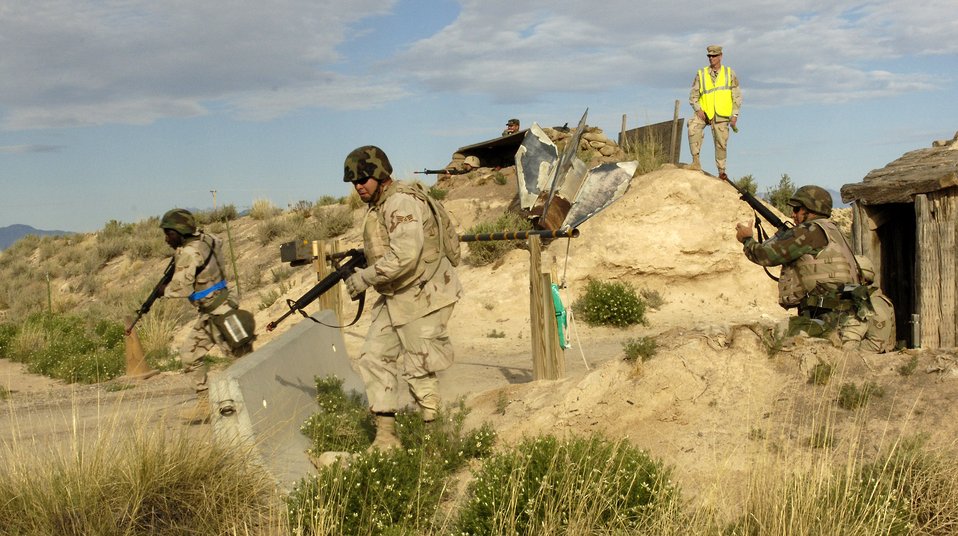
Airmen complete realistic deployment exercise

Airmen from the 49th Civil Engineer Squadron charge out of an entry control point during a convoy as part of an exercise at Holloman Air Force Base, N.M., May 7. The civil engineers trained with Soldiers from Fort Bliss, Texas, to incorporate the total force scenario experience.